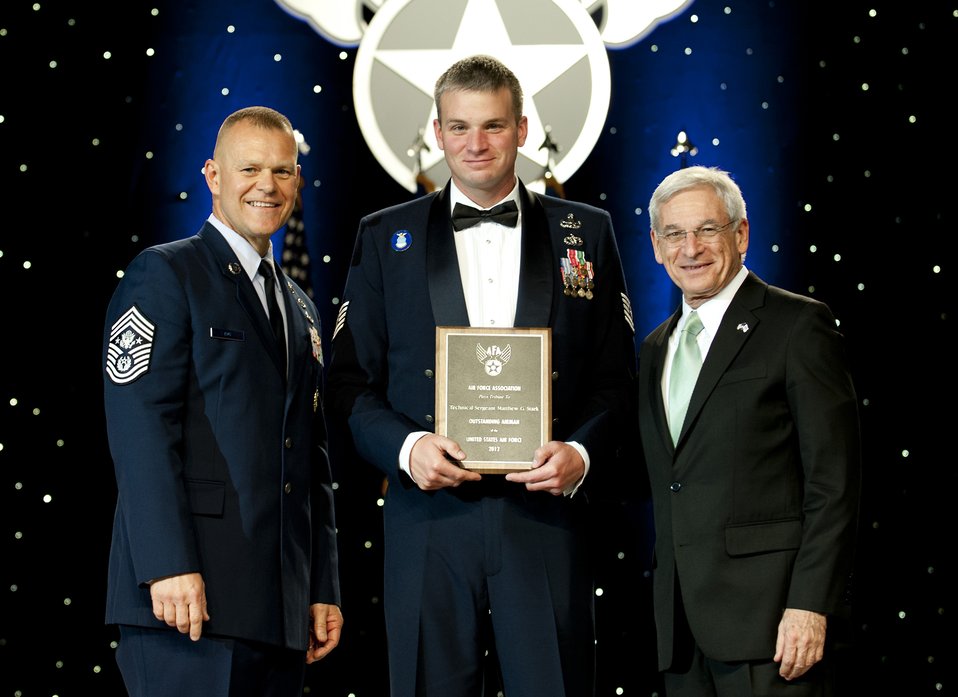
12 Outstanding Airmen of the Year

Chief Master Sgt. of the Air Force James Roy, left, and Sandy Schlitt, right, Air Force Association's chairman of the board, present a plaque to Tech. Sgt. Matthew Stark during the 12 Outstanding Airmen of the Year reception and awards dinner in Washington, D.C., Sept. 17, 2012. The recipients were recognized for superior leadership, job performance, community involvement and personal achievements. Stark is with the 354th Fighter Wing from Eielson Air Force Base, Alaska.